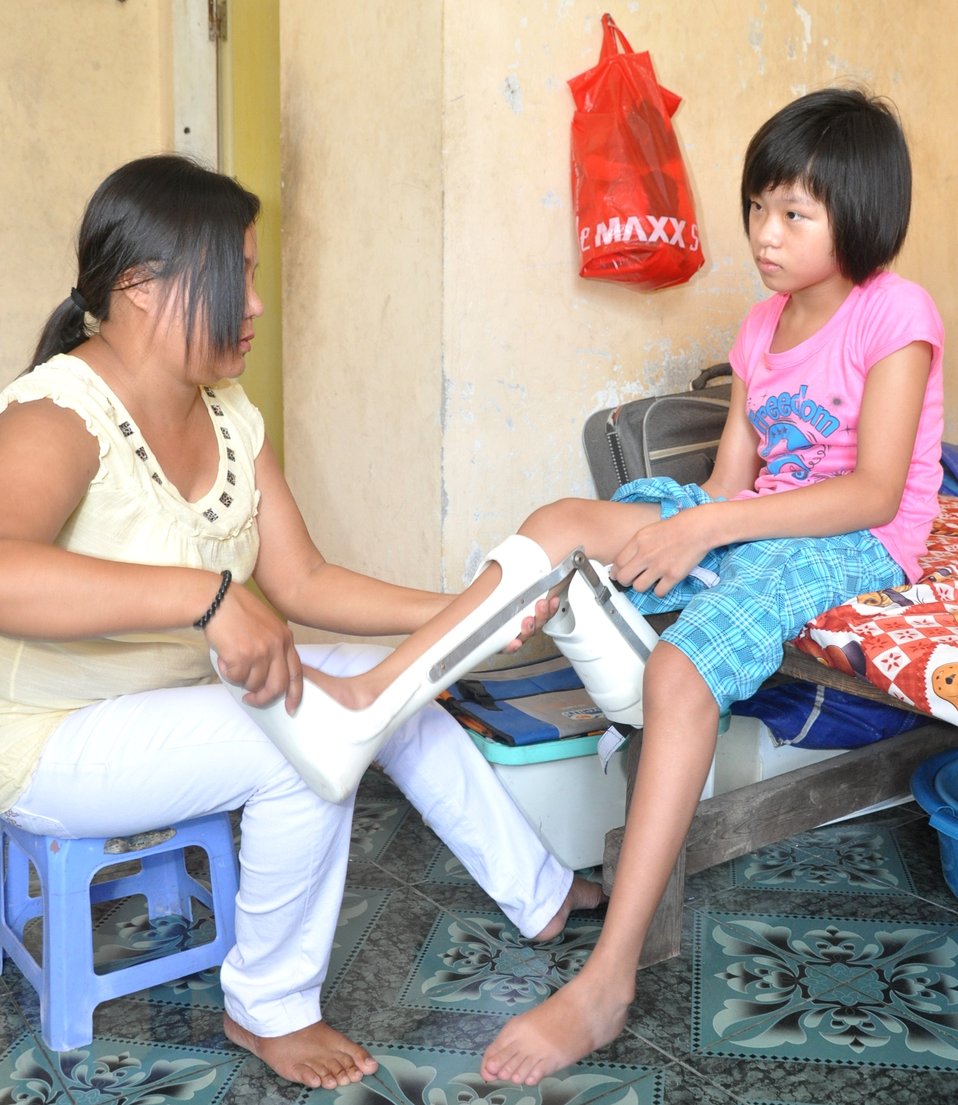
USAID supports rehabilitation for persons with disabilities in Danang.

Danang, June 10, 2013.